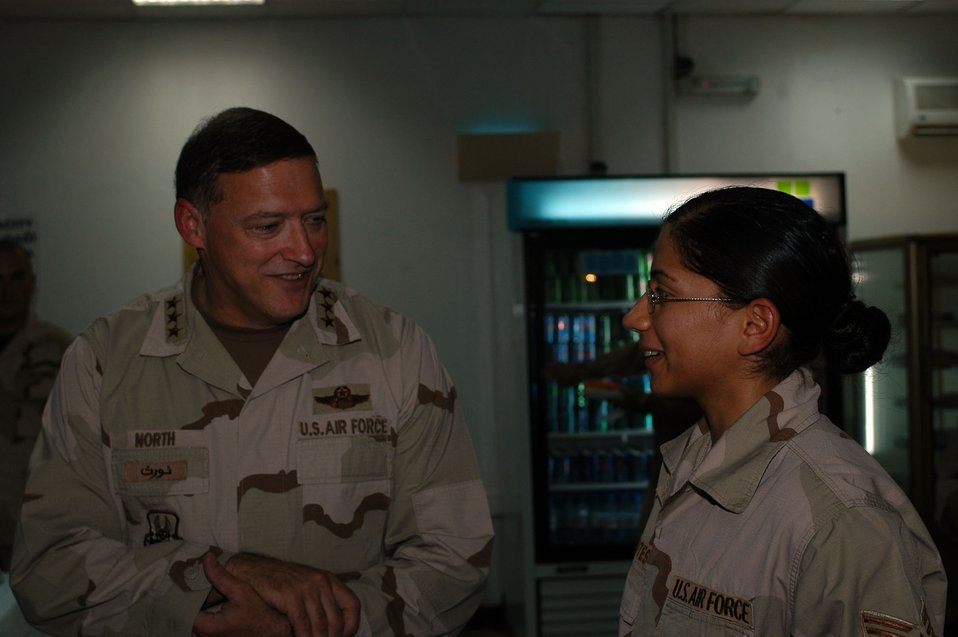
USCENTAF commander visits Airmen at Camp Lemonier

Lt. Gen. Gary L. North, Central Air Forces Commander and Air Component Commander to U.S. Central Command, spends a few minutes with Senior Airman Amber Cortes, a Combined Joint Task Force-Horn of Africa comptroller, during lunch with the Airmen at the Bob Hope Dining Facility Aug. 28. General North stopped Camp Lemonier to visit Airmen serving in the Central Command Area of Operations.